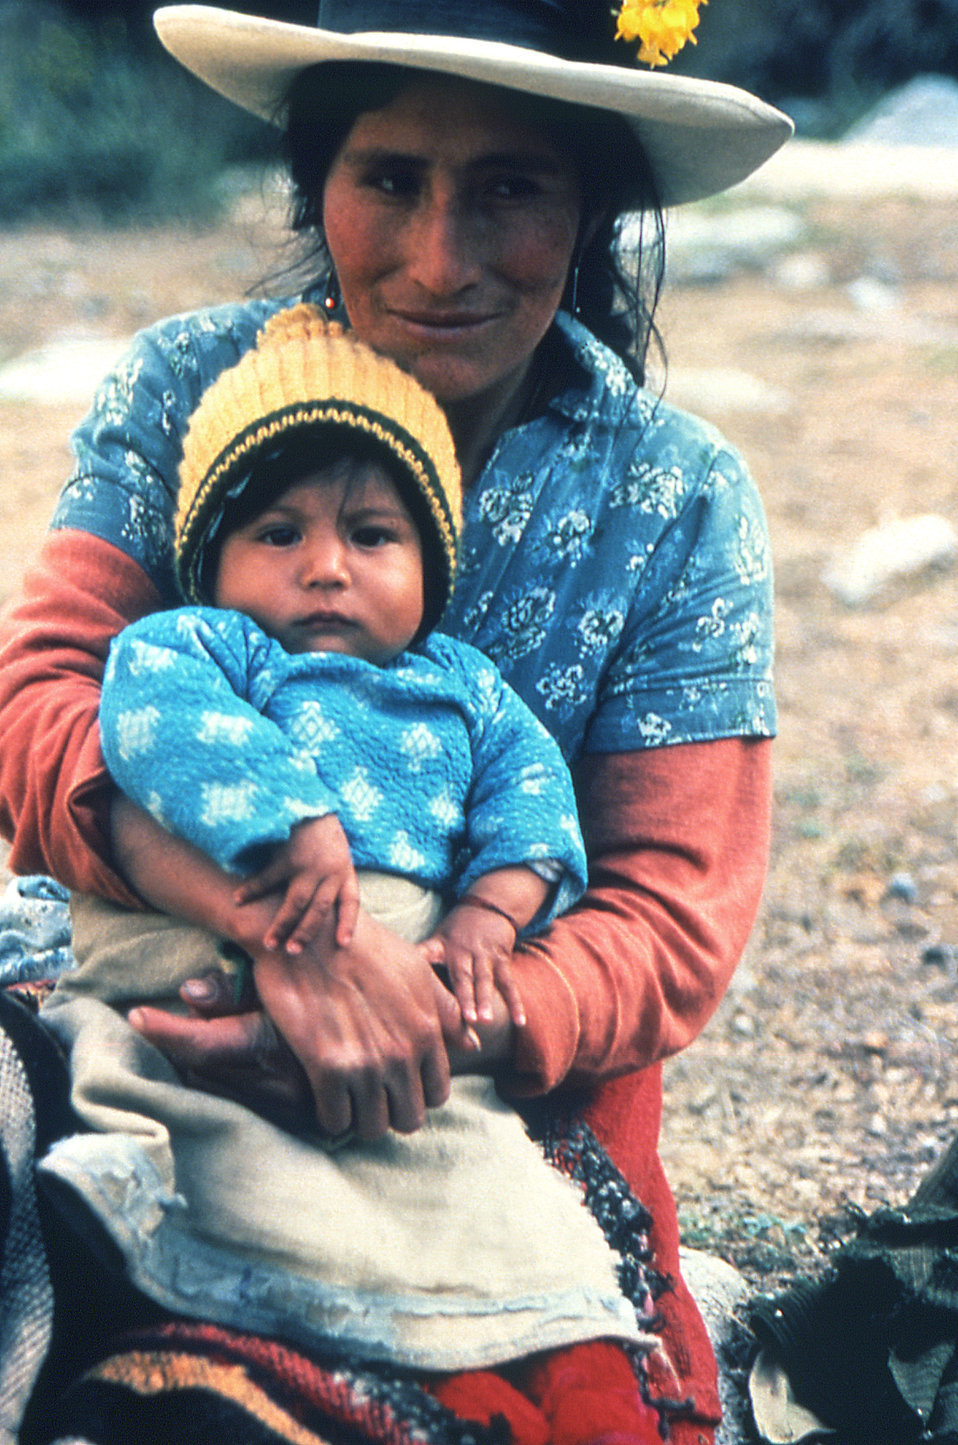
Captured in an unidentified Latin-American country, this 1989 image depicts a Latin-American mother holding here young child on her lap. This picture was taken during a polio eradication campaign, the goal of which was to vaccinate the unprotected against poliovirus acquisition.